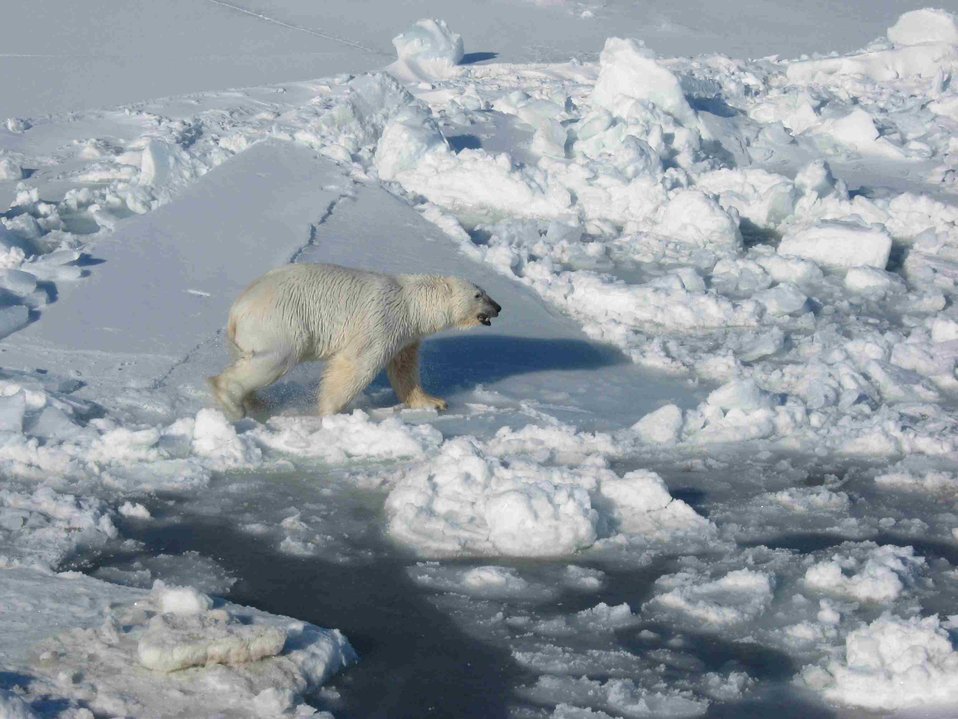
Male Polar Bear on Pack Ice

A male polar bear walks on pack ice near the open water.